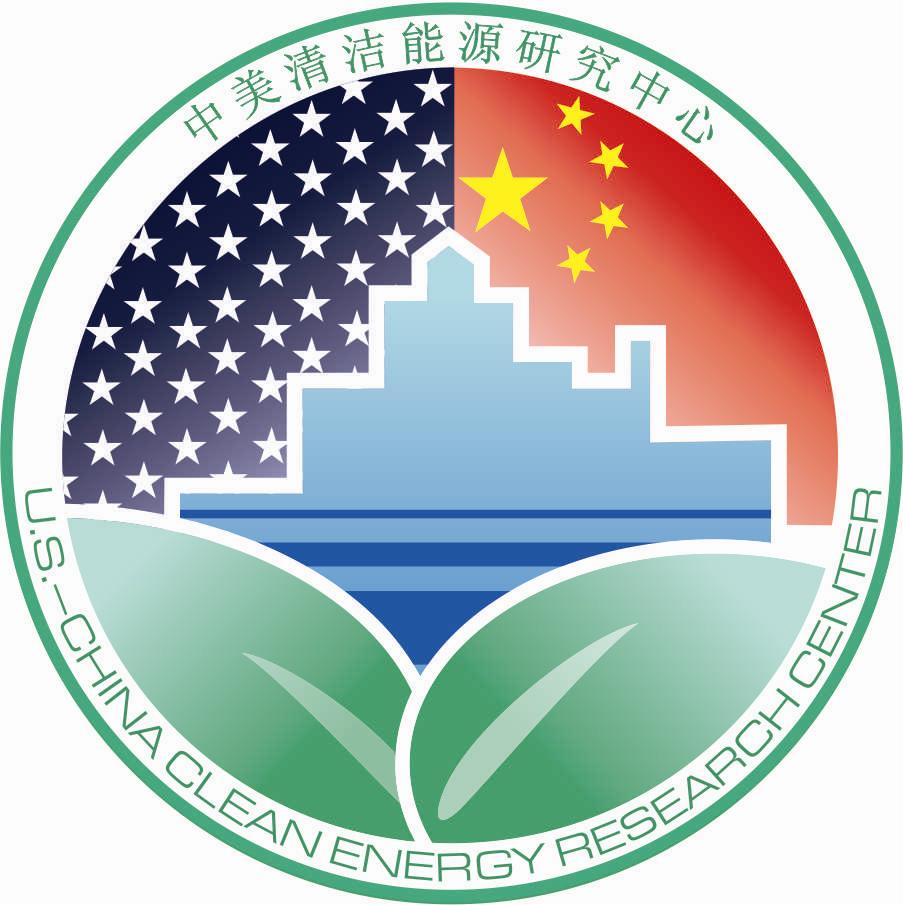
U.S.-China Clean Energy Research Center Logo